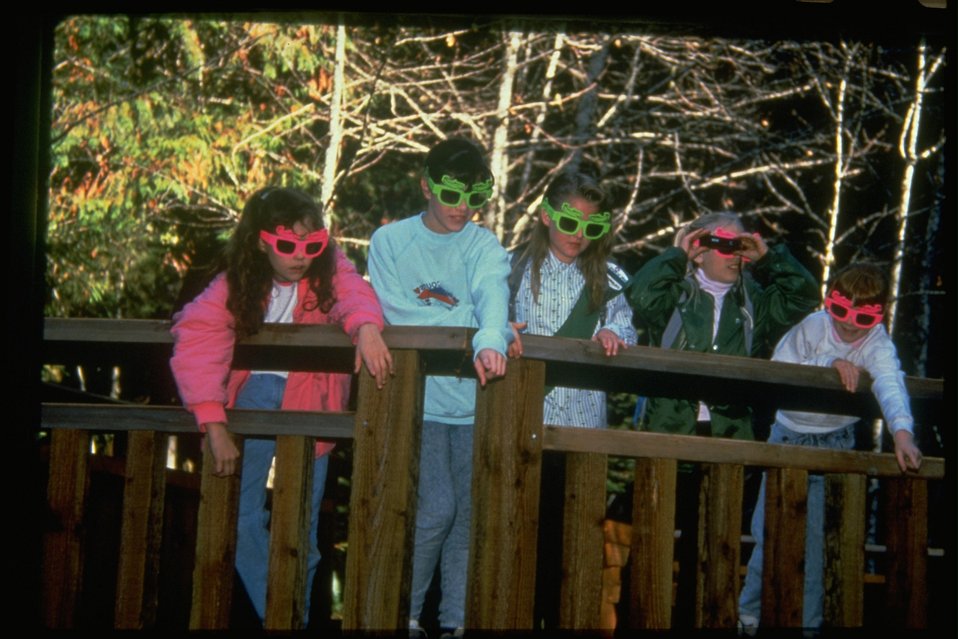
Kids wearing colorful glasses while participating in the Cascade Stream Watch at Wildwood Recreation Site.